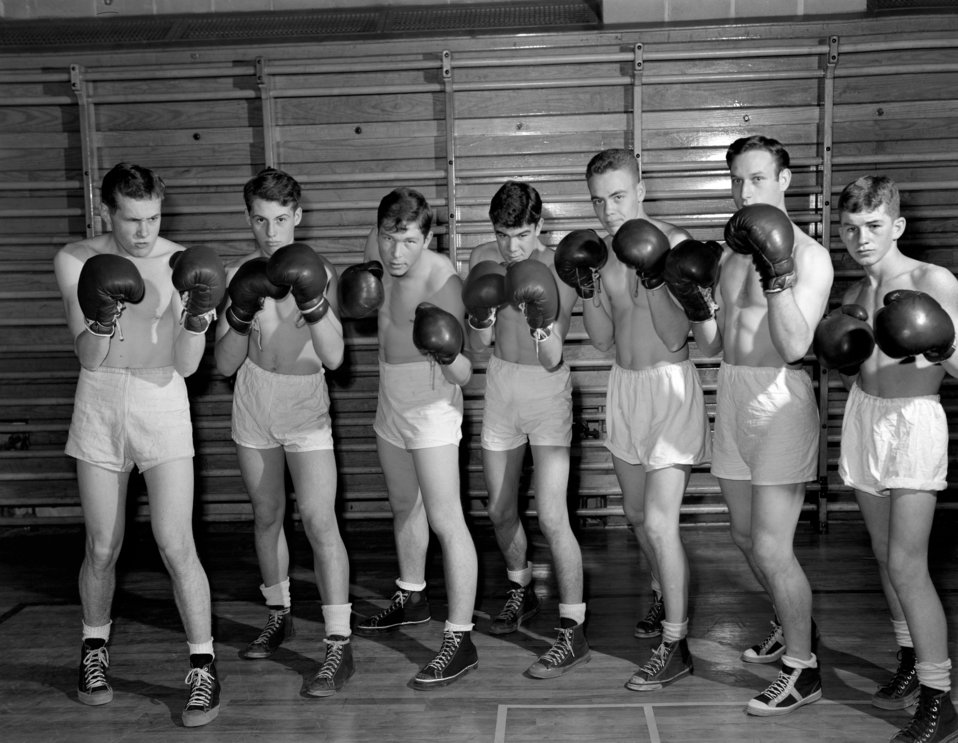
High School Boxing Team Oak Ridge 1947

4061-3 DOE photo Ed Westcott 12-1947 Oak Ridge Tennessee